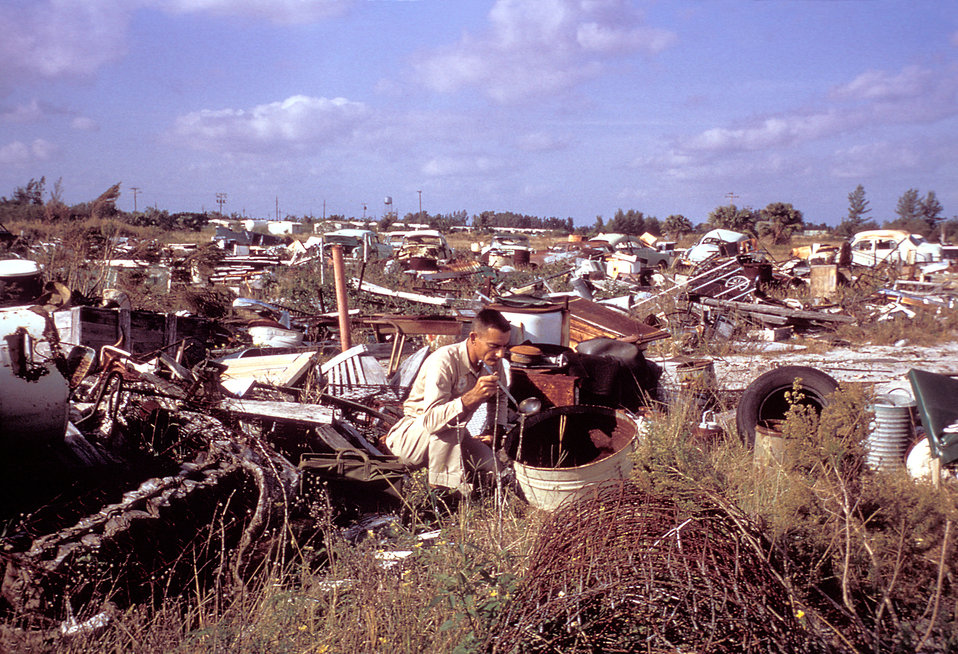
This photograph was taken during the 1965 Aedes Aegypti eradication program in Miami, Florida, 1965.